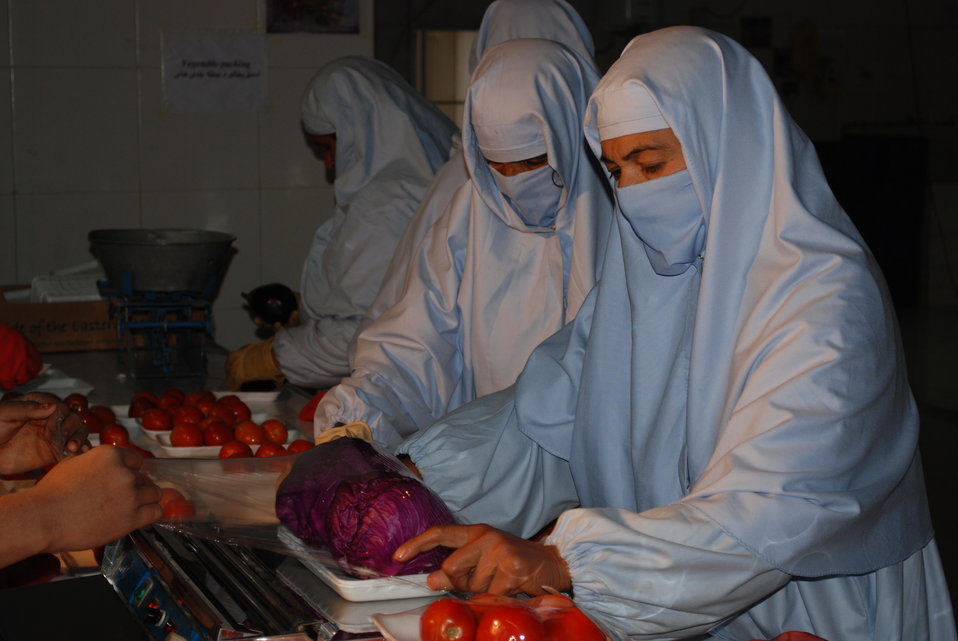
'On the Road' in Nangarhar Province